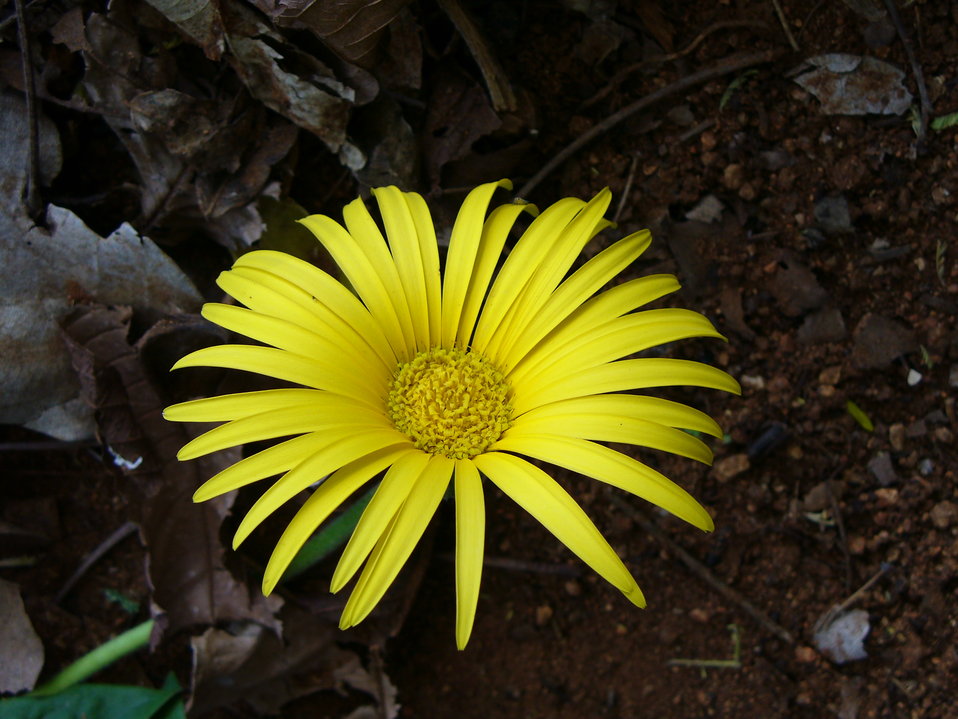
I am the originator of this photo. I hold the copyright. I release it to the public domain. This photo depicts a flower.